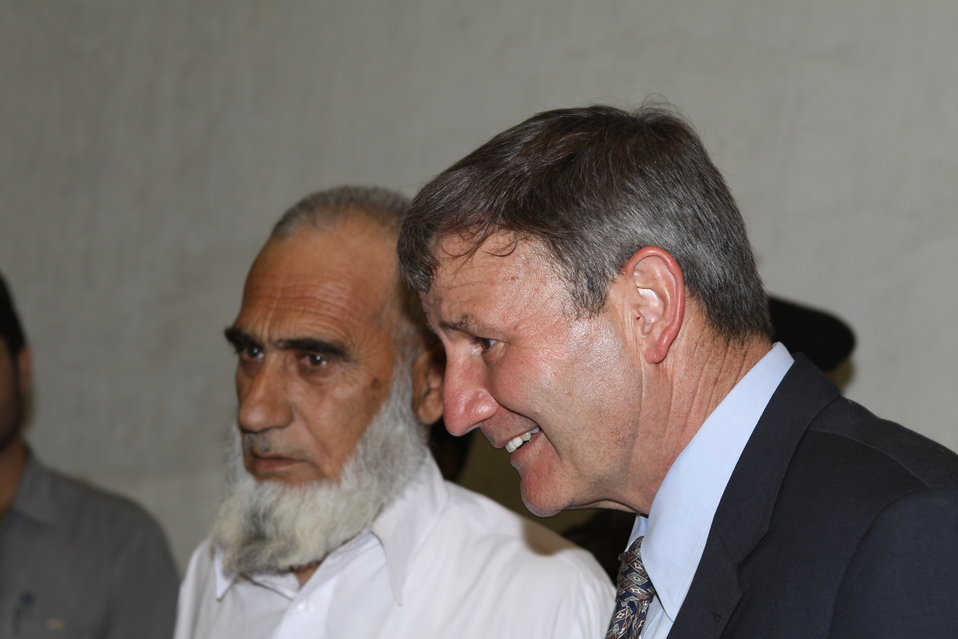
100525 Hirat Textile Company 761